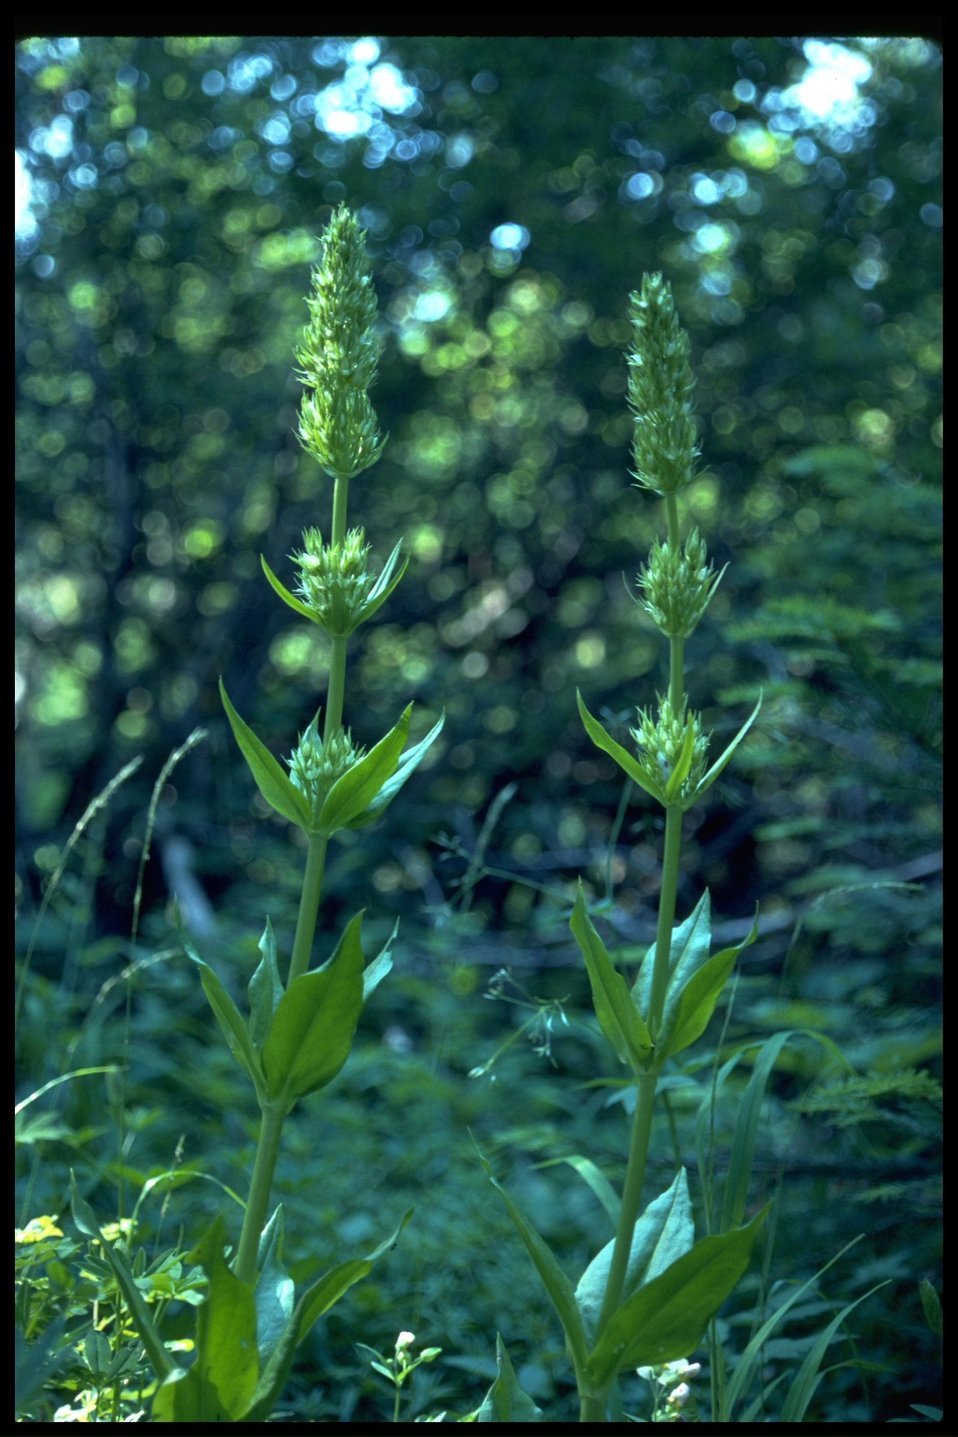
Medium shot of Umpqua swertia (Frasera umpquaensis).